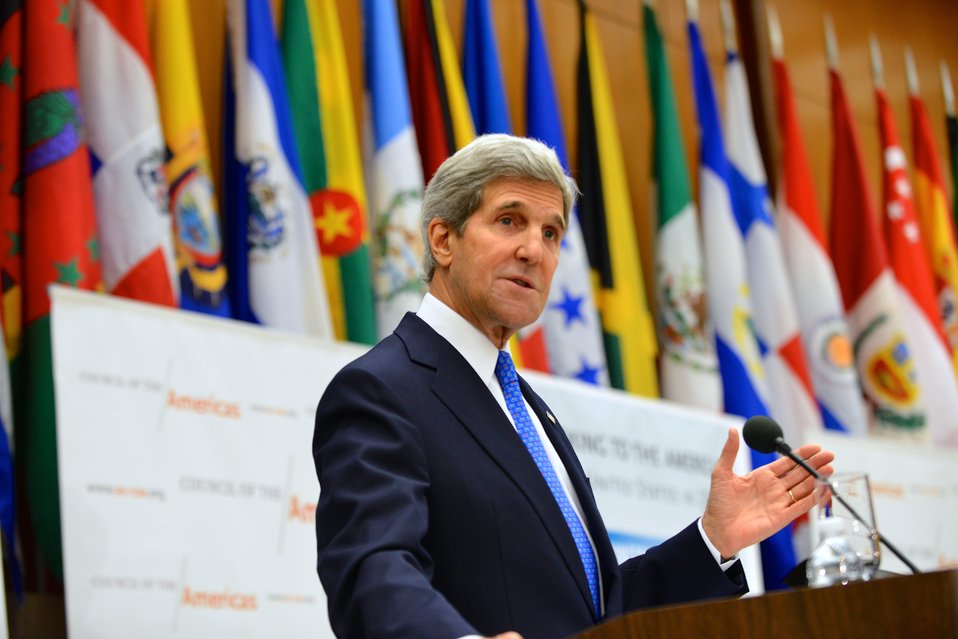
Secretary Kerry Addresses Council of the Americas' 44th Annual Conference on the Americas

U.S. Secretary of State John Kerry delivers remarks at the Council of the Americas' 44th Annual Conference on the Americas at the U.S. Department of State in Washington, D.C., on May 7, 2014.